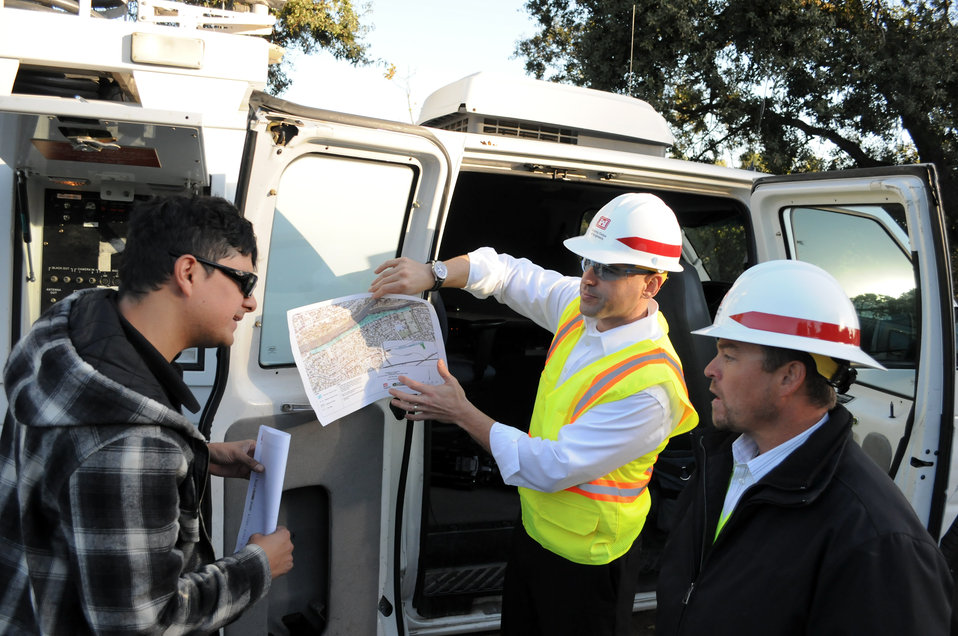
Explaining erosion repair work

U.S. Army Corps of Engineers Sacramento District project manager Dave Cook (right) explains erosion repair work to CBS Television Stations news editor Rene Luna (left), before a TV interview Nov. 1, 2011. Cook is overseeing repairs of two erosion sites along the south bank of the American River in Sacramento, Calif. The project is part of the Sacramento River Bank Protection Project to repair erosion, levees and reduce flood risk for Sacramento.